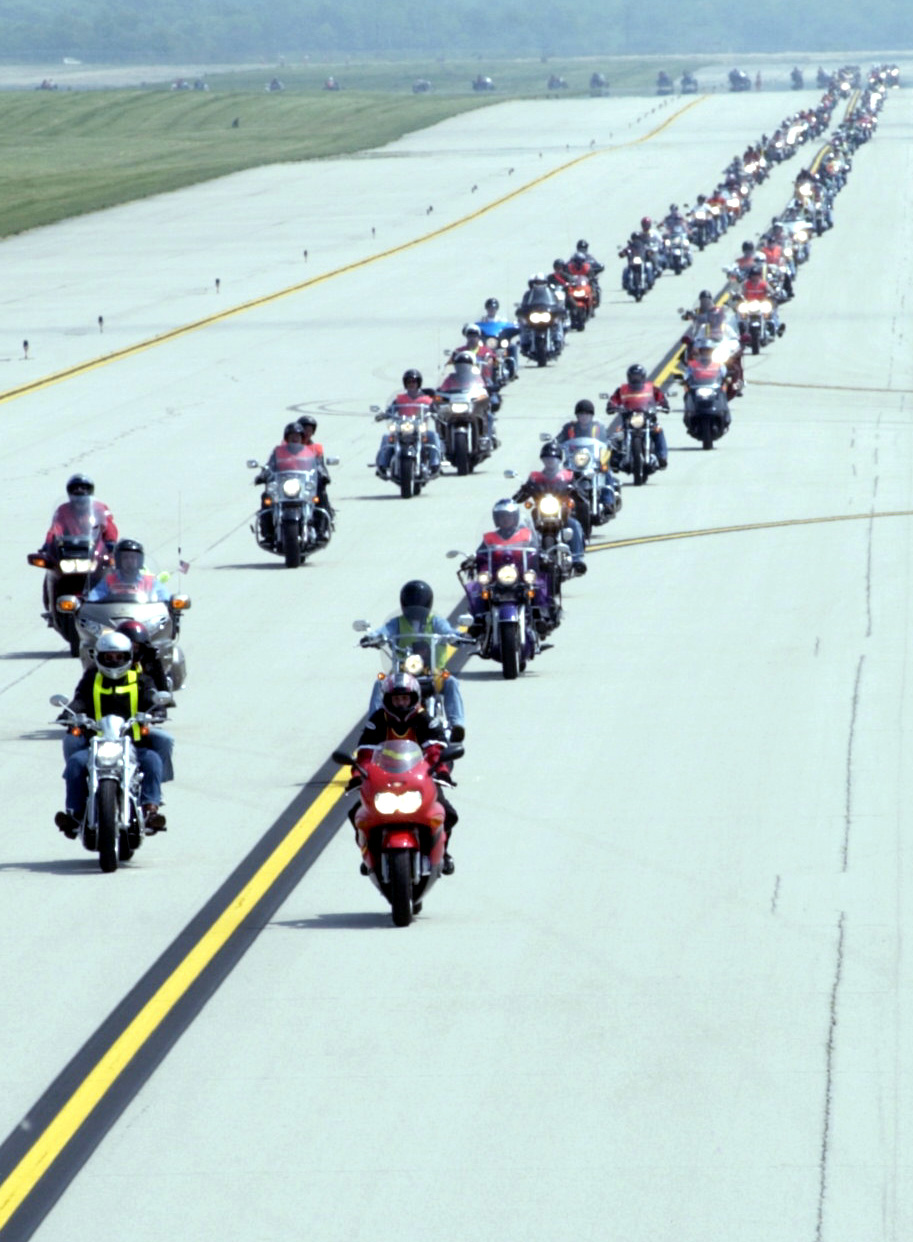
Joy ride

WRIGHT-PATTERSON AIR FORCE BASE, Ohio -- About 230 motorcyclists celebrated the kickoff of a motorcycle mentoring campaign here May 21 with a ride down a taxiway. The campaign brings new motorcyclists together with experienced riders to learn about the hazards of motorcycling.